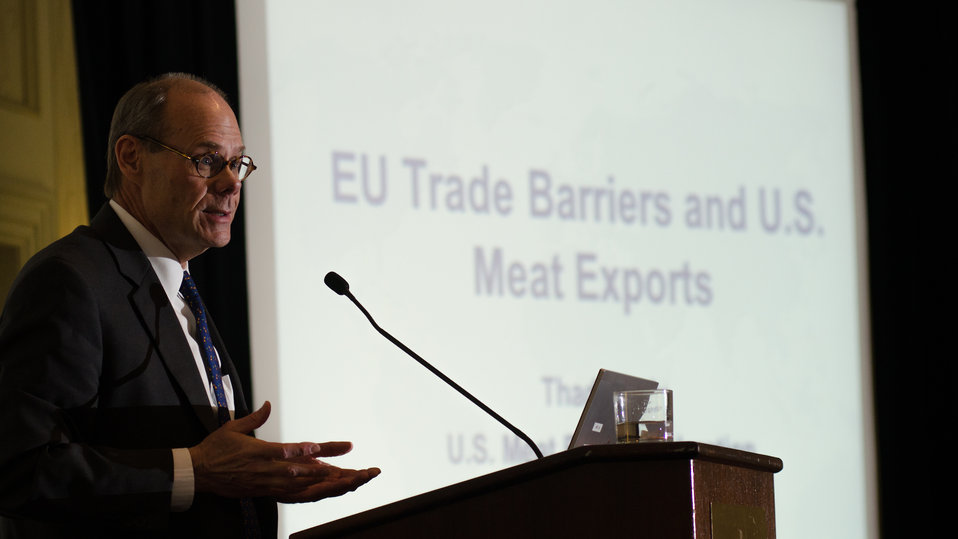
U.S. Meat Export Federation’s Thad Lively spoke about EU Trade Barriers and U.S. Meat Exports at the 2013 Agricultural Outlook Forum, held at the Crystal Gateway Marriott Hotel, Arlington, Virginia on Thursday, Feb. 21, 2013. This annual Forum brings together producers, policymakers, and business, government, and industry leaders to meet, exchange ideas, and discuss timely agriculture issues.